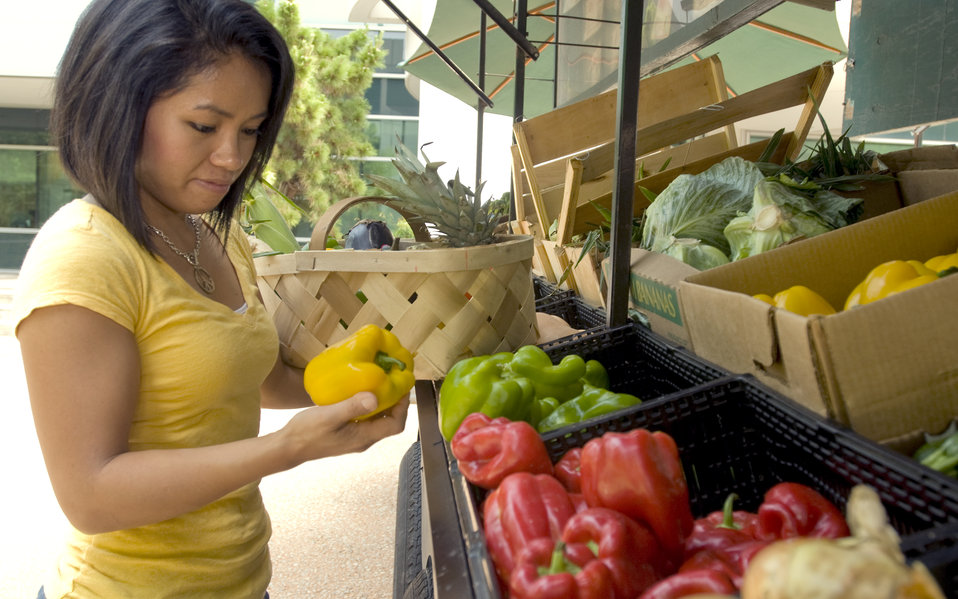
A woman shopping for produce

This photograph depicts a woman shopping at a mobile produce market, making healthy food choices from an array of fresh fruits and vegetables. After having made her choices, she had placed her selections into a woven wooden basket, which she'd propped up behind her, onto the edge of the market trailer. In this particular view, she was inspecting a bright yellow bell pepper as a possible additional purchase. Note some of the foods that were available at this mobile produce facility.